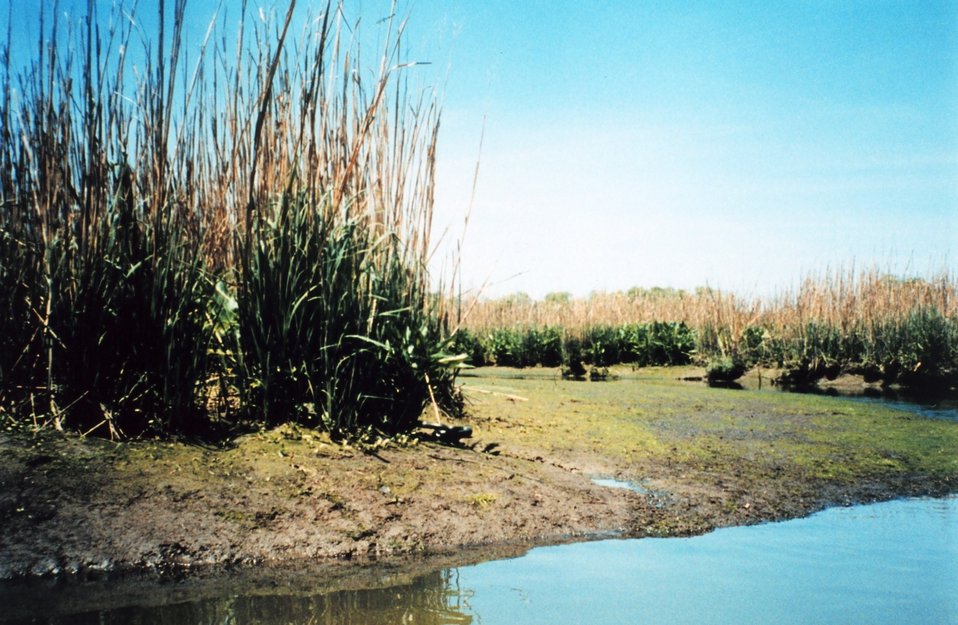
Notice the large black rat snake to the right of green marsh grass.